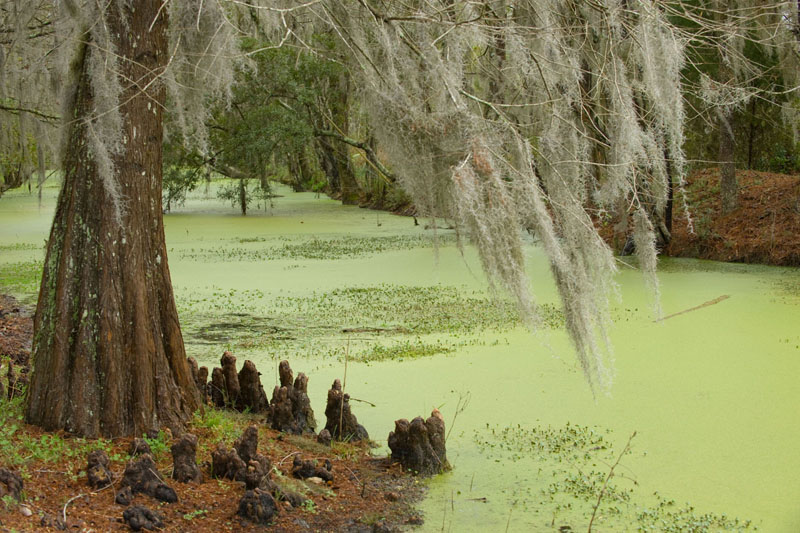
Blackwater National Wildlife Refuge, Maryland, 2008 USEPA Photo by Eric Vance